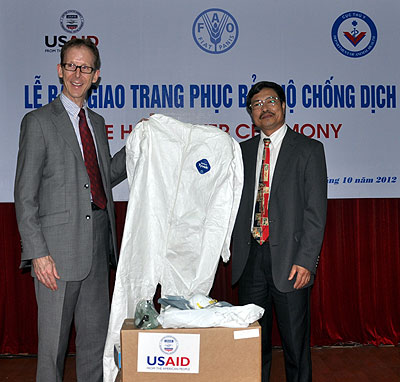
USAID Mission Director Joakim Parker, left, and Director General of Vietnam's Department of Animal Health, Dr. Pham Van Dong at the Protective Gear Handover Ceremony

Handover of personal protective equipment event in Hanoi.